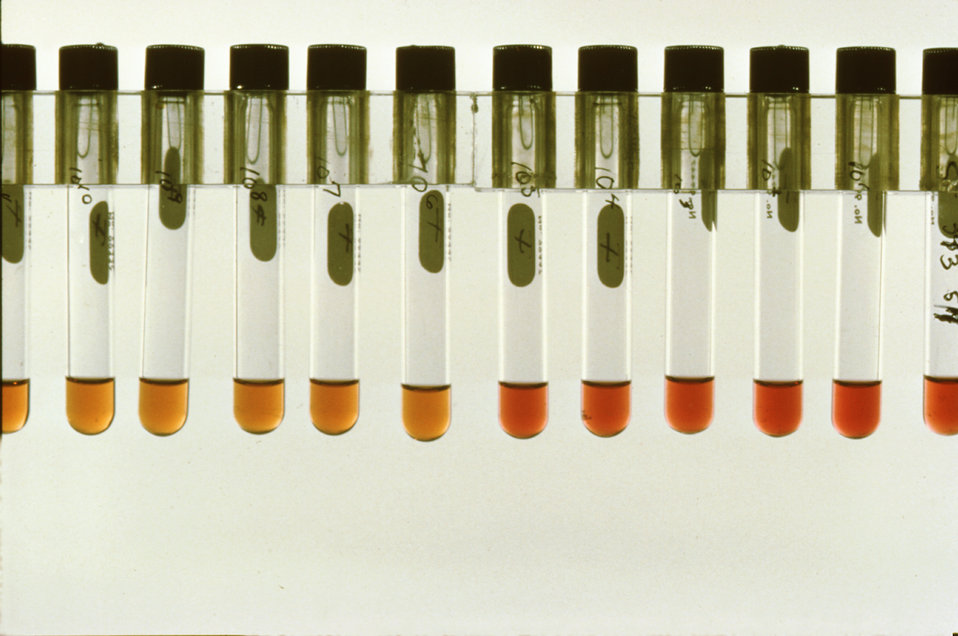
This image depicts metabolic broth tubes of Mycoplasma hominis showing color changes based on metabolic activity levels.